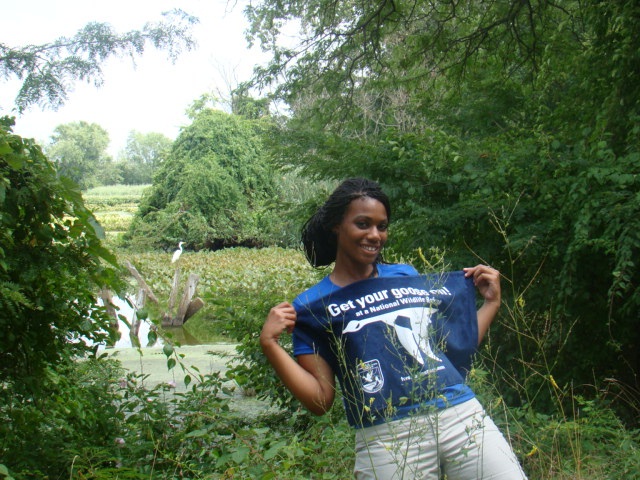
Get Your Goose On!

USFWS Intern Shanita Brown Getting Her Goose On at John Heinz NWR.